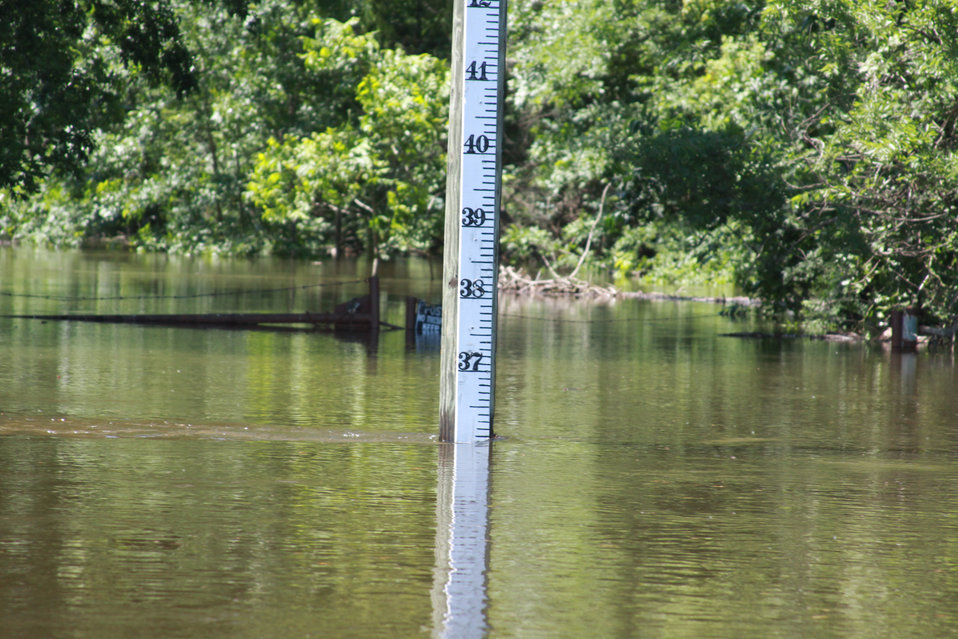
A flood gauge on the Mississippi River from the Louisiana side on Sunday, May 15, 2011.